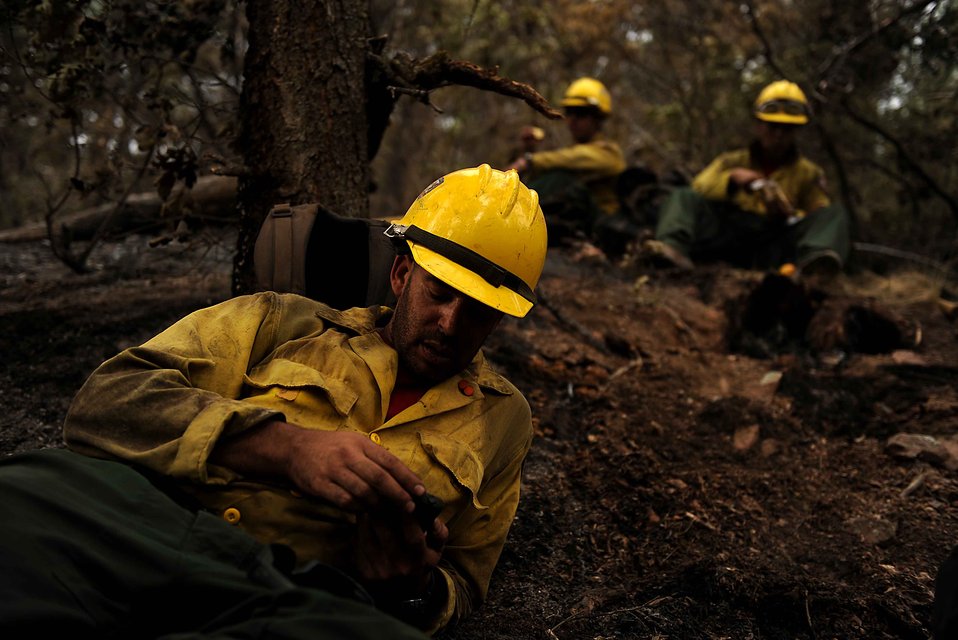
Quick break

Chris Loung looks at his phone during a team lunch break from cutting a fire line in the Mount Saint Francois area of Colorado Springs, Colo., June 28, 2012. Loung and the rest of the firefighters of the Vandenberg Air Force Base, Calif., Hot Shots are helping to battle several fires in Waldo Canyon.